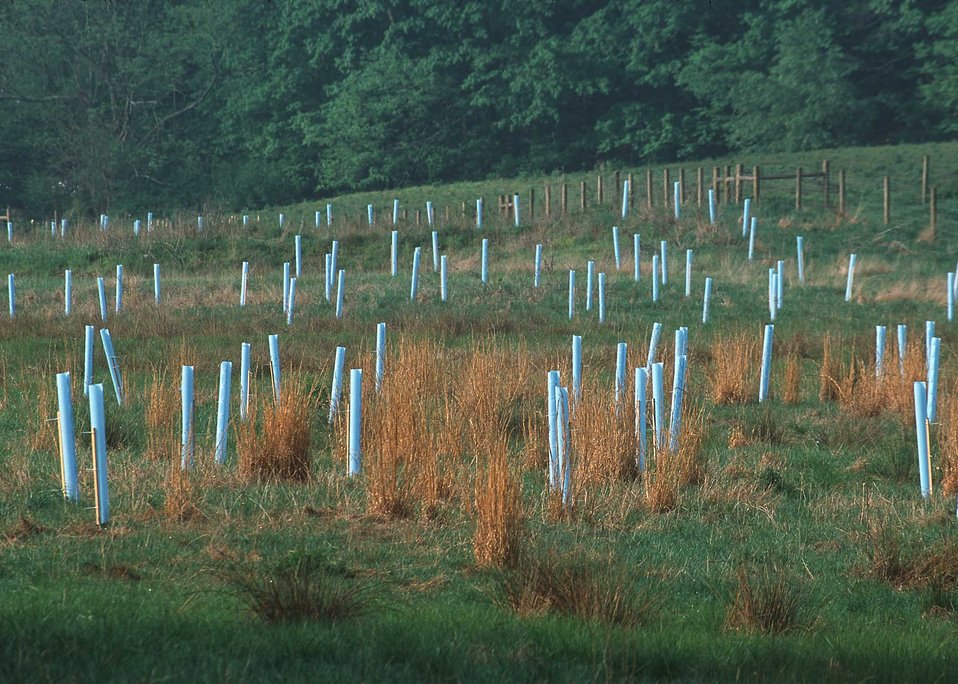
Wetland Reserve Program site showing tree planting and wetland restoration practices, Marion, Virginia.